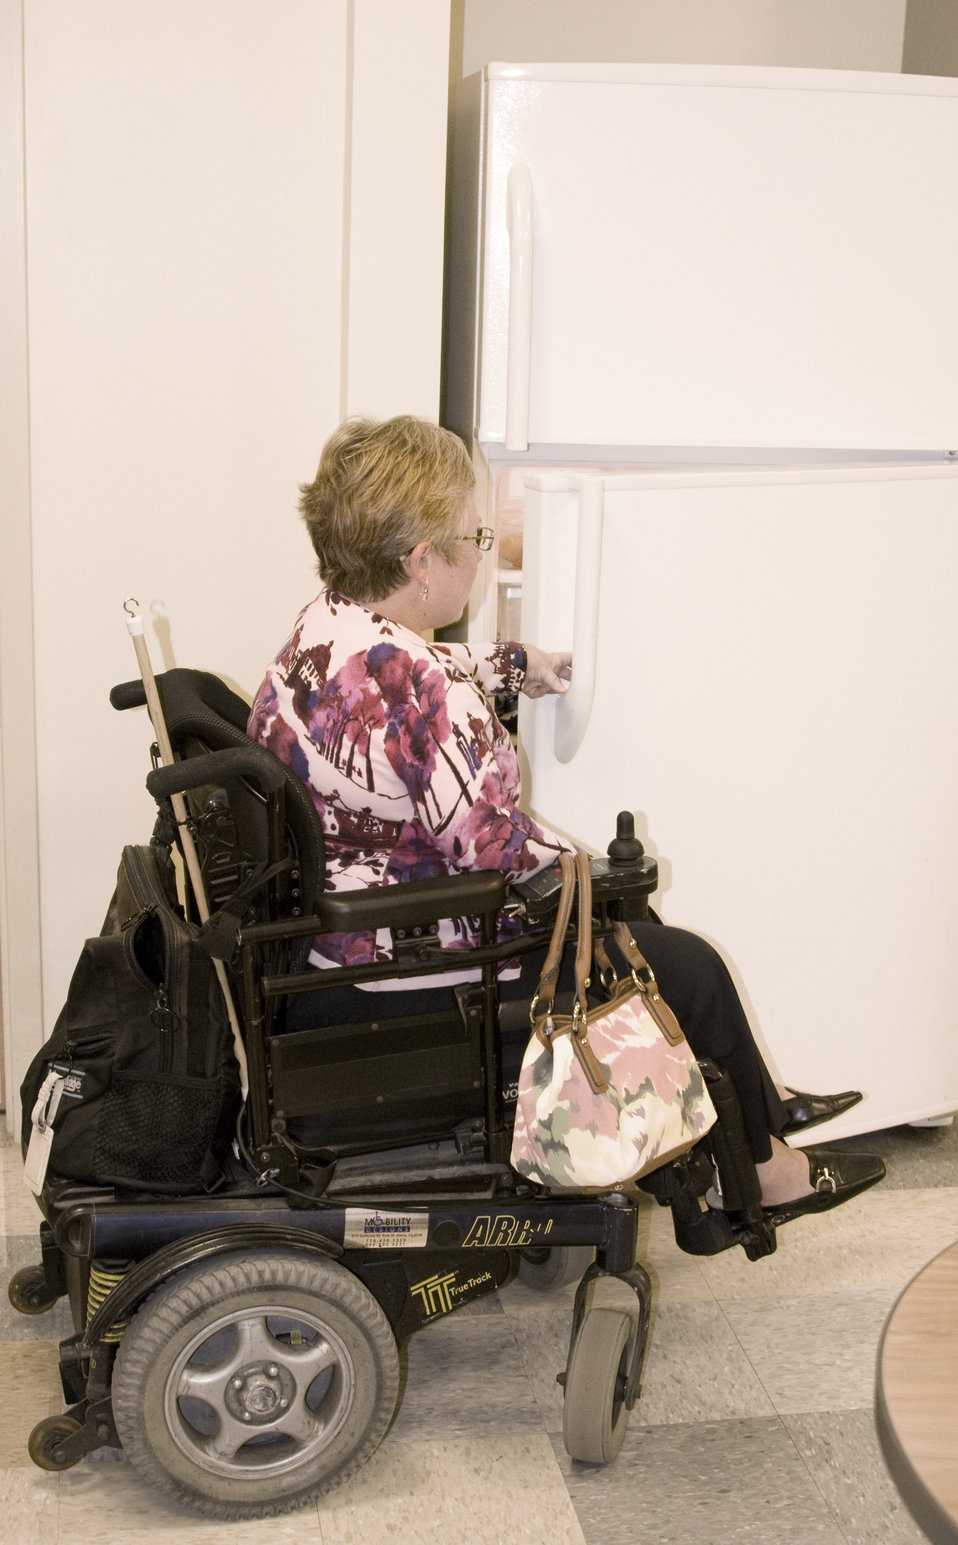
This woman who was seated in her wheelchair, was photographed in this kitchen setting while opening the refrigerator's door. Note that the height of the doors, both to the refrigerator and freezer, are situated in such a way as to be highly-accessible to all who would need to place, or obtain contents to the unit.